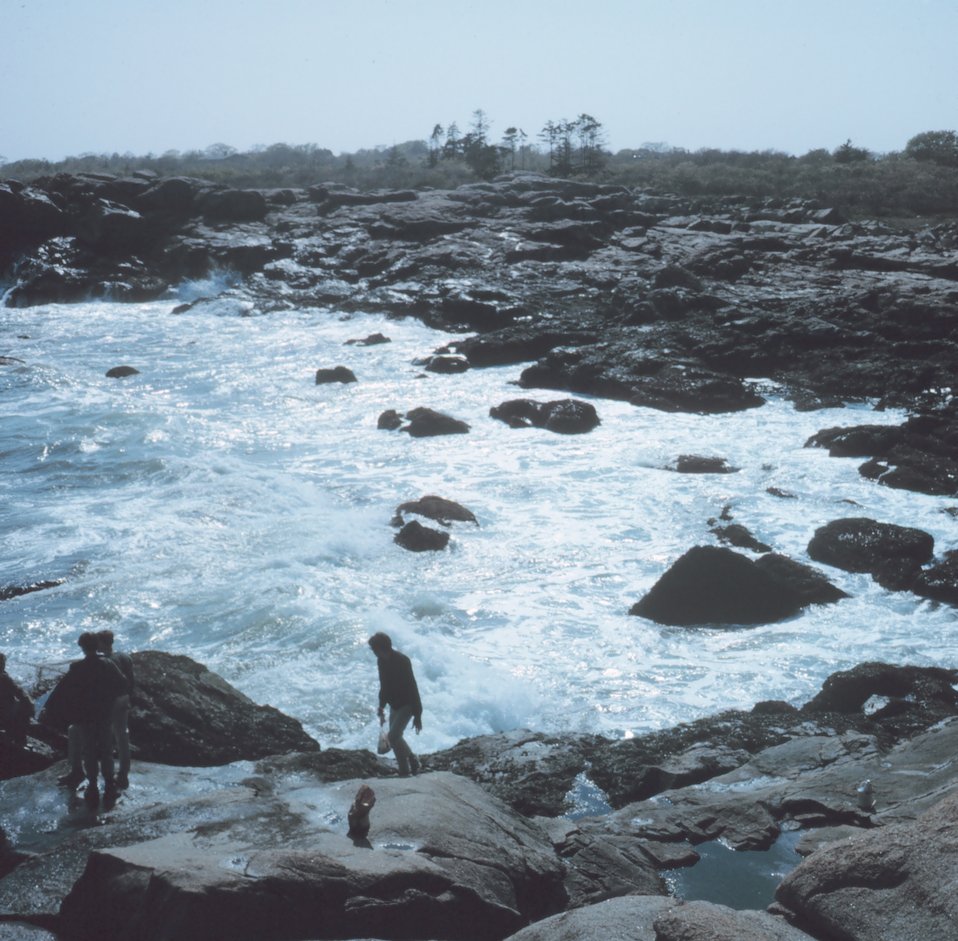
St. Mary's College of Maryland students investigating the various seaweeds and invertebrates found in Massachusetts tide pools.